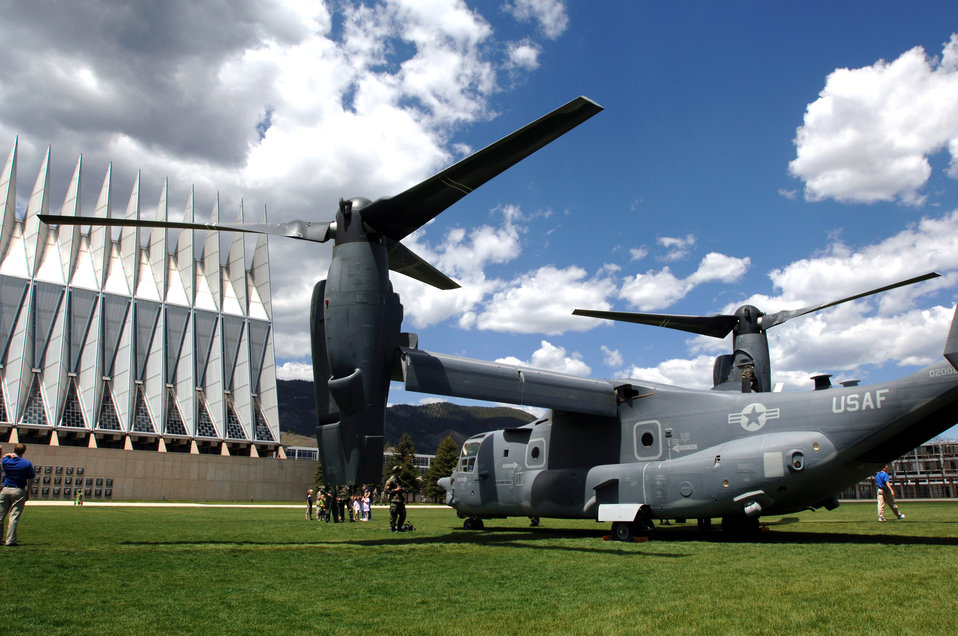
Osprey comes for a visit

A CV-22 Osprey sits on display at the U.S. Air Force Academy May 11. Cadets in the Department of Aeronautical Engineering's High-Performance Computing Research Center contributed to making this aircraft an operational reality through their research in computational fluid dynamics. The famed Academy chapel is in the background.